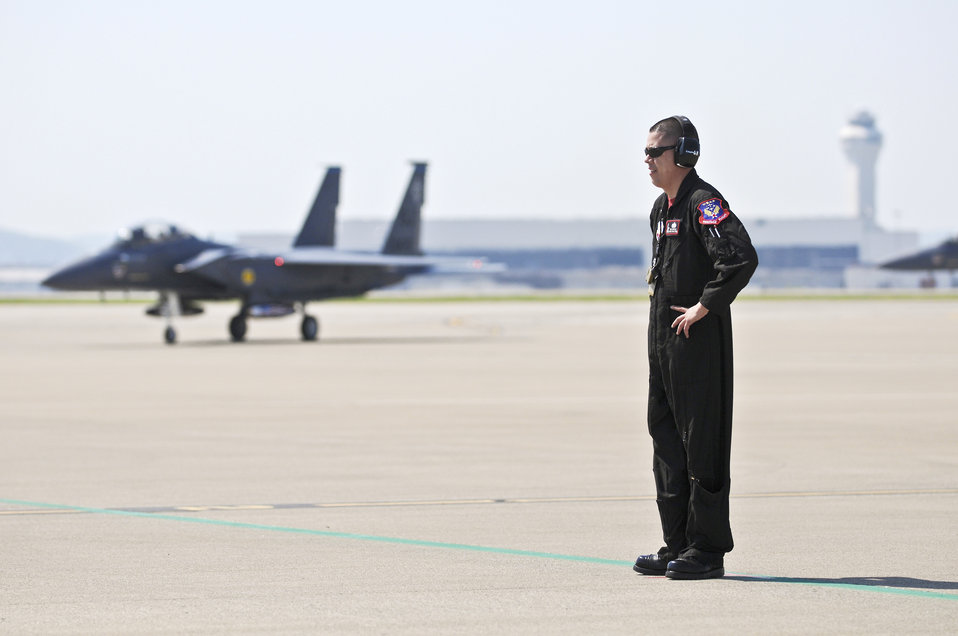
Strike Eagle, Fighting Falcon 'thunder' over Kentucky

Staff Sgt. Gabriel Castillo stands by to marshall an F-15E Strike Eagle to its parking spot April 15, 2010, at the Kentucky Air National Guard Base in Louisville, Ky. The F-15E will participate in the Thunder Over Louisville air show. Sergeant Castillo is a crew chief with the 4th Fighter Wing at Seymour Johnson Air Force Base, N.C.